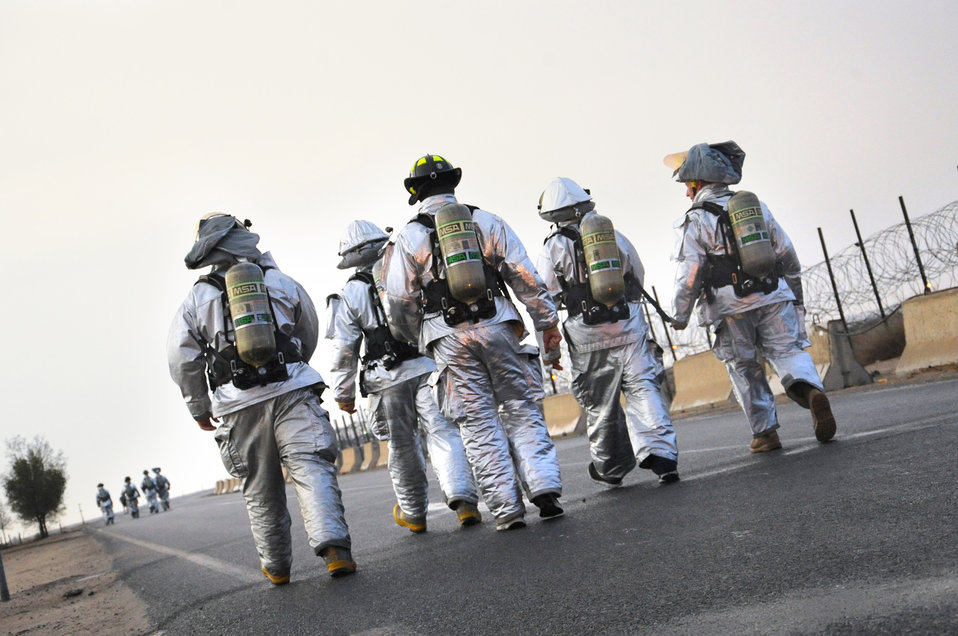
Southwest Asia fun run

Firefighters from the 386th Expeditionary Civil Engineer Squadron participate in the explosive ordnance disposal fun run Dec. 31, 2010, at an air base in Southwest Asia. The fun run was part of a fundraiser and to raise awareness for EOD Wounded Warriors.